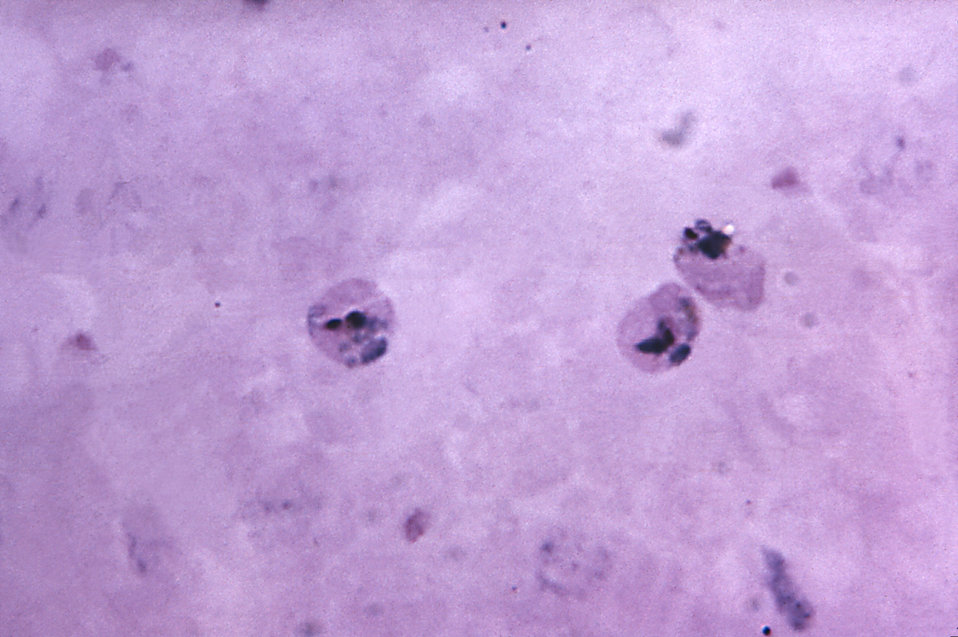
This thick film micrograph contains growing young ameboid trophozoites of the parasite P. vivax; Magnified 1125x.